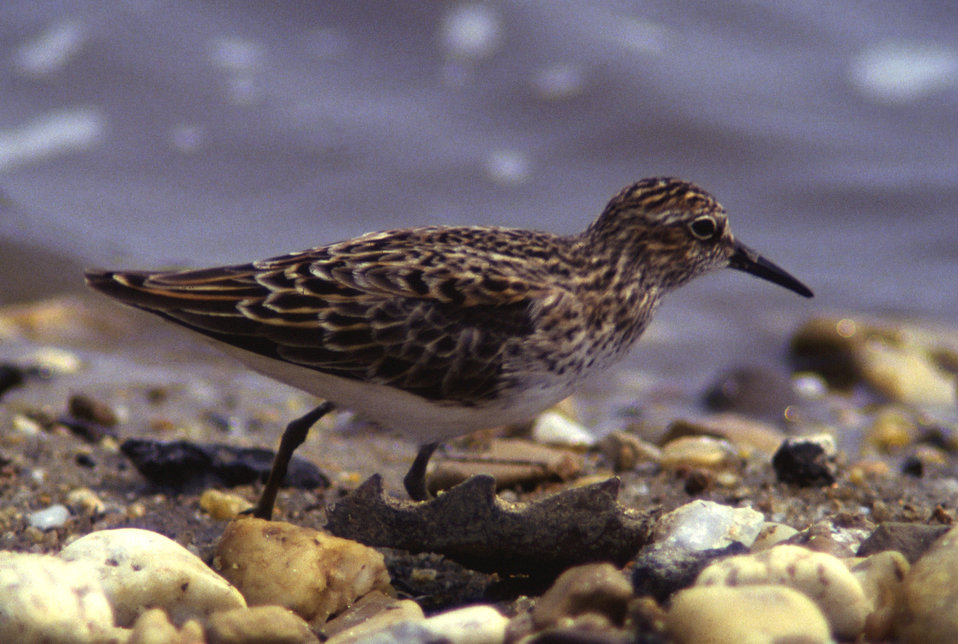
Least Sandpiper

Pt. Mahon, DE.